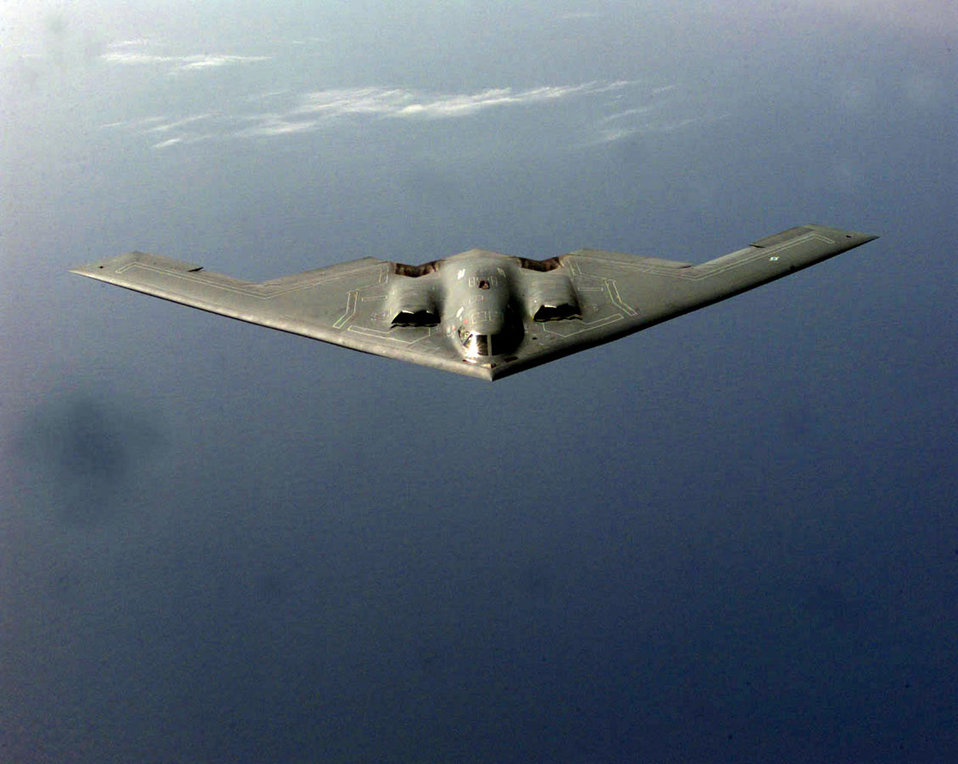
B-2 refueling run

OPERATION ALLIED FORCE -- A B-2 Spirit bomber prepares to receive fuel from a KC-135 Stratotanker during a mission in the European theater supporting NATO Operation Allied Force. The B-2 Spirit is a multi-role bomber capable of delivering both conventional and nuclear munitions. A dramatic leap forward in technology, the bomber represents a major milestone in the U.S. bomber modernization program. The B-2 brings massive firepower to bear, in a short time, anywhere on the globe through previously impenetrable defenses.